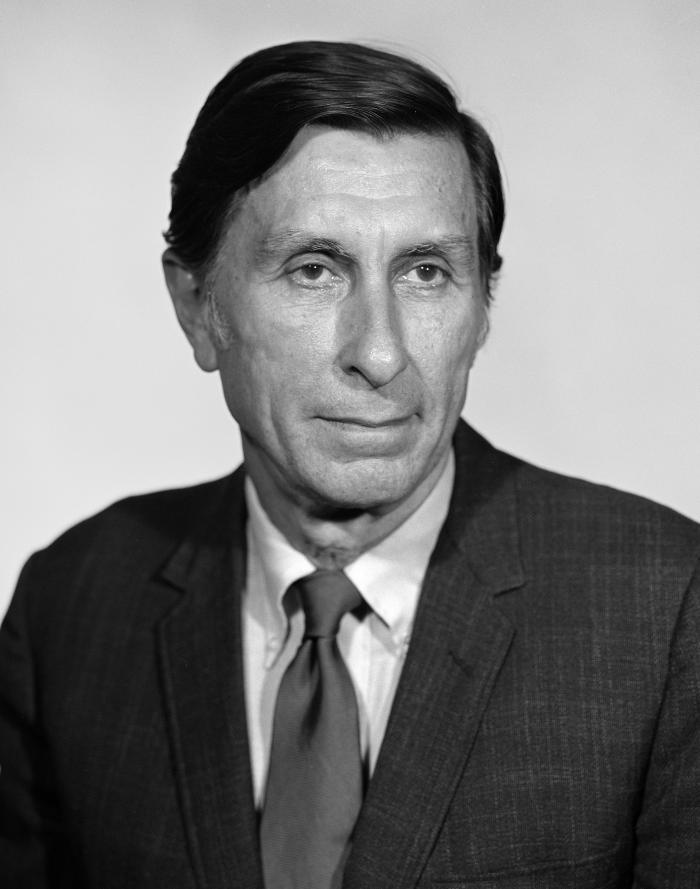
This photograph showed Centers for Disease Control official, Charles C. Shepard, M.D., who was internationally recognized for his work in leprosy, and Legionnaires' disease research.